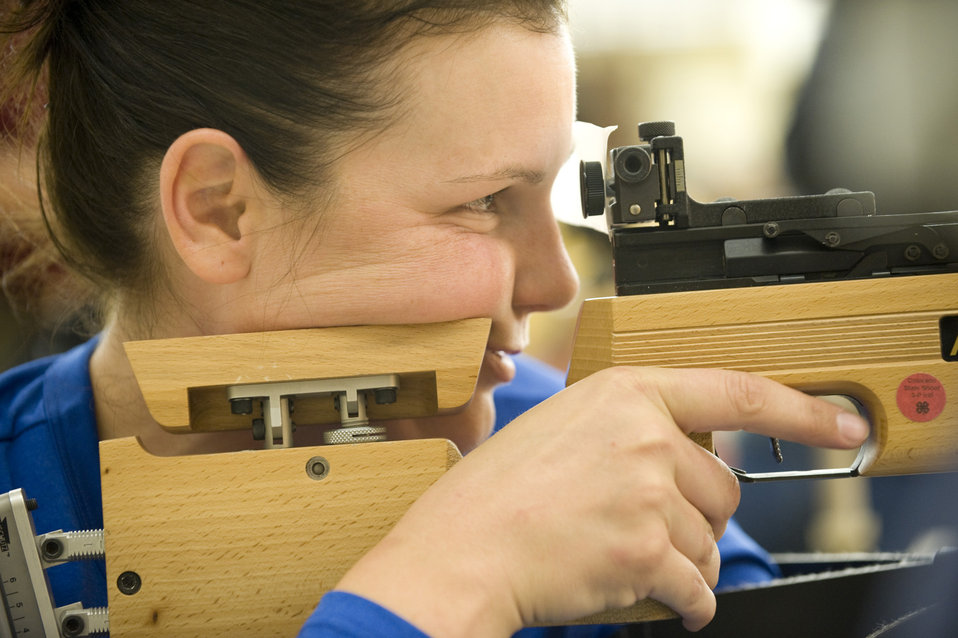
Warrior Games Airmen prepare for competition

Former Staff Sgt. Stacy Pearsall practices shooting May 11, 2010, at the Olympic Training Center in Colorado Springs, Colo. Pearsall along with 16 other Air Force athletes are competing in the inaugural Warrior Games through May 14, 2010, in Colorado Springs.